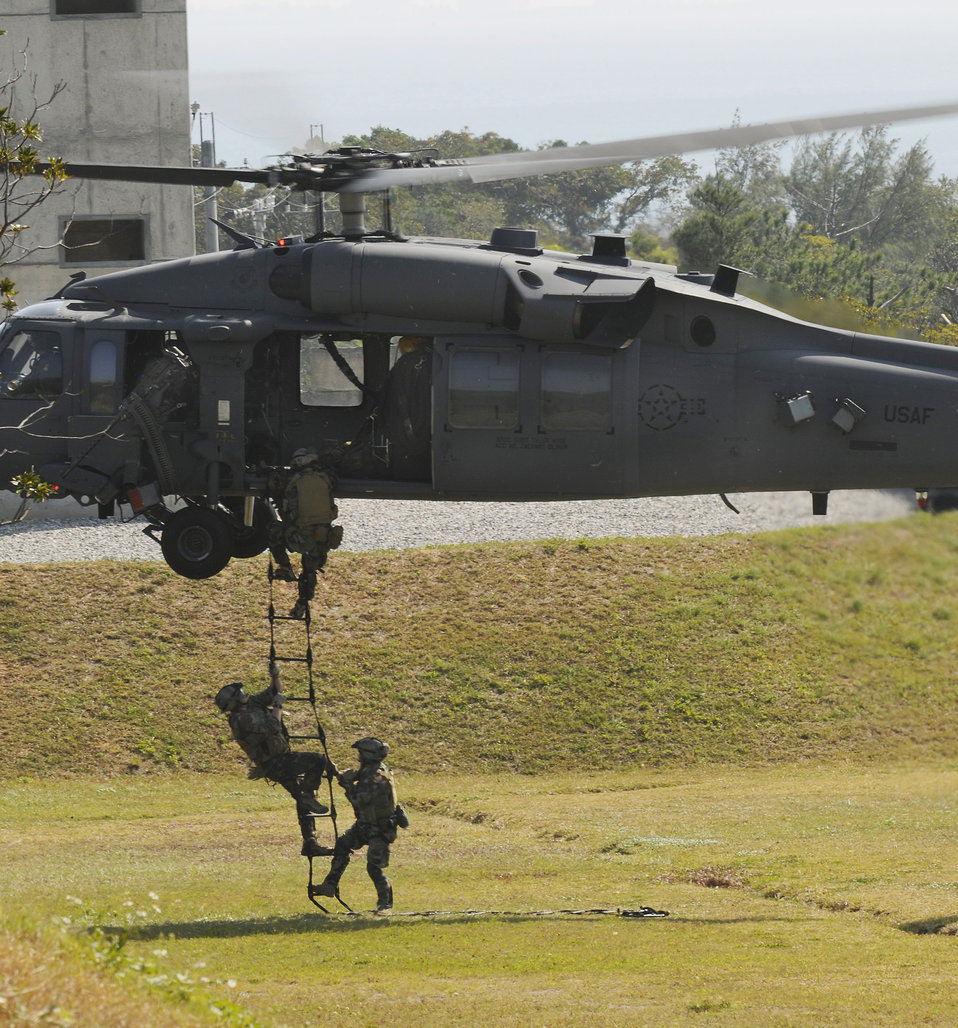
33rd Rescue Squadron wins 2009 Air Force's Verne Orr Award

Pararescuemen assigned to the 31st Rescue Squadron at Kadena Air Base, Japan, climb into an HH-60G Pave Hawk helicopter during exercise Cope Angel 09-1 in Japan.